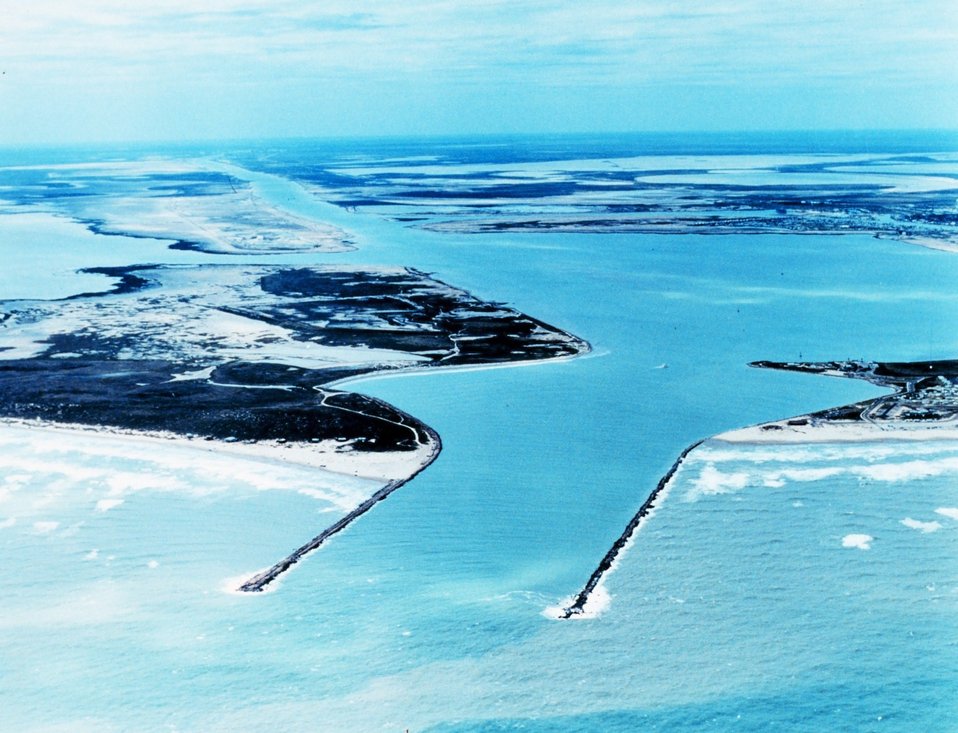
2604 North Latitude 9710 West Longitude.